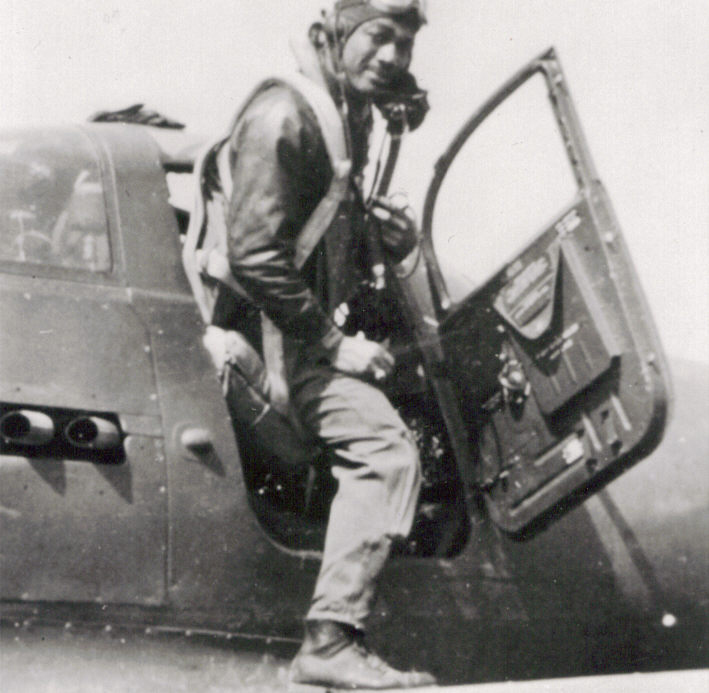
Lee Archer: Tuskegee Airman

Lt.Col. Lee Archer: Tuskegee Airman and first and only African-American ace of World War II.